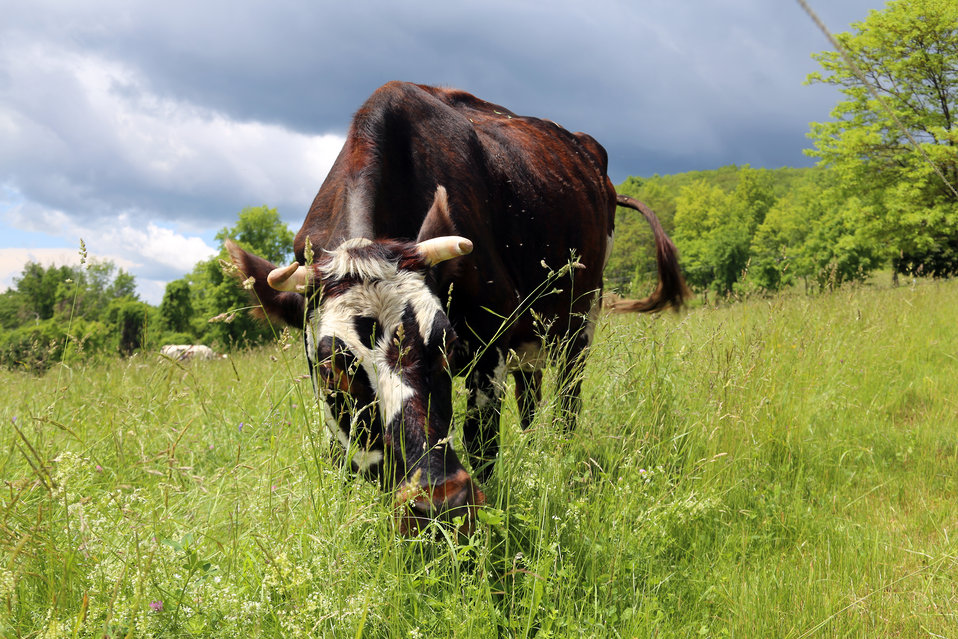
Title of Photograph

A cow grazes on the improved pasture at Blue Hill Farm in Great Barrington, MA. Blue Hill Farm owner Sean Stanton worked with the U.S. Department of Agriculture’s (USDA) Natural Resource Conservation Service (NRCS) on a conservation plan that recommended 35 acres of rotational grazing. Rotational grazing is a management system where livestock is moved from one field to another, improving pastures that were dominated by vegetation that the cows had no desire to eat.